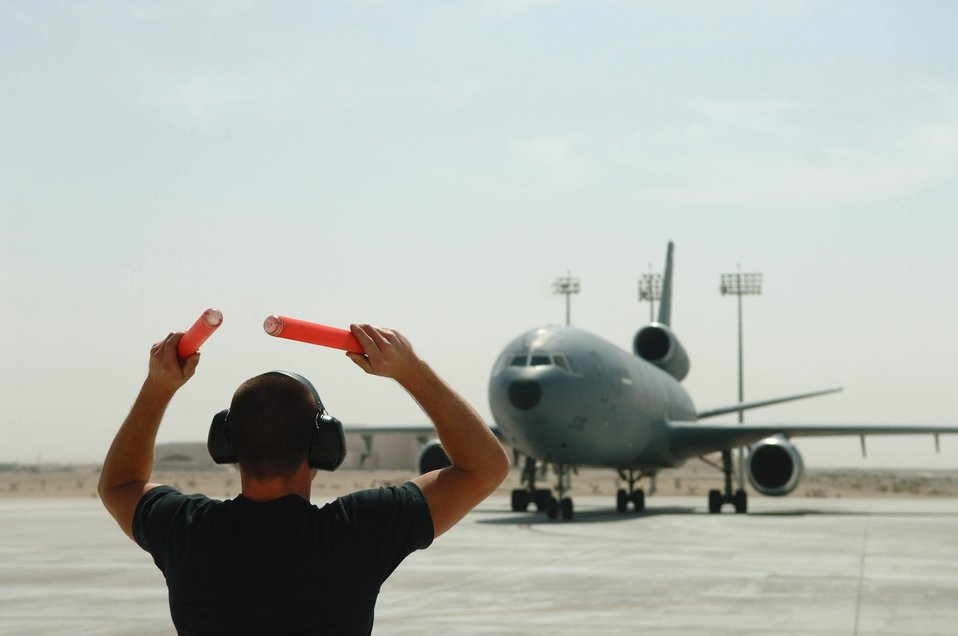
Airmen expand Air Force global reach with KC-10s

Senior Airman Douglas Martin marshals a KC-10 Extender from its parking space in order to launch for a mission March 27 at a base in Southwest Asia. Providing 6.5 million pounds of jet fuel weekly, the KC-10 and the Airmen of the 380th Air Expeditionary Wing who support it give global reach to U.S. and coalition aircraft supporting operations Enduring Freedom and Iraqi Freedom. Airman Martin is a 380th Expeditionary Aircraft Maintenance Squadron crew chief.